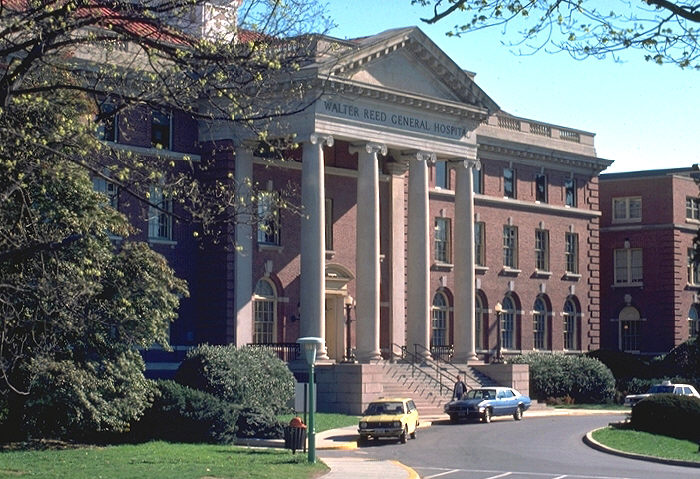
Original Walter Reed General Hospital at Walter Reed Army Medical Center, Washington, DC.